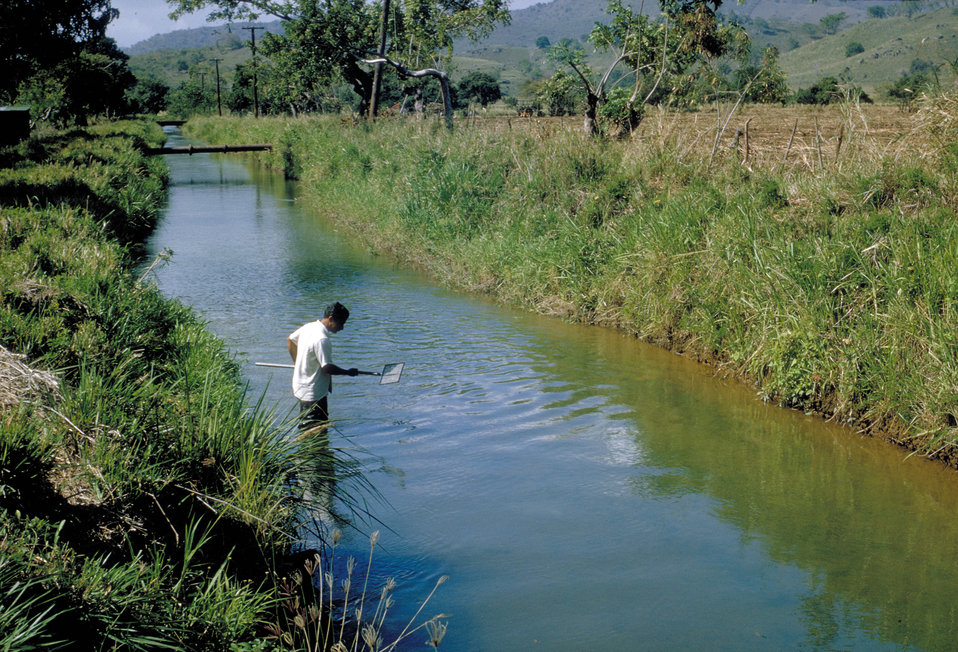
Worker dipping for Australorbis snails in stream